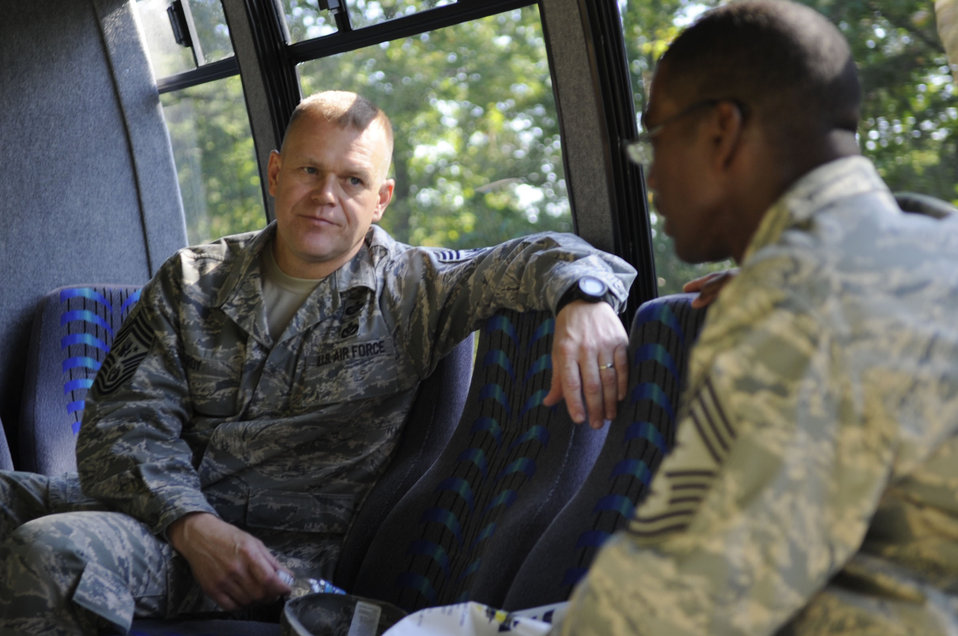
Top enlisted Airman visits Andrews Airmen

Chief Master Sgt. of the Air Force James A. Roy talks with Chief Master Sgt. James Davis Oct. 7, 2009, at Joint Base Andrews Naval Air Facility Washington. Chief Roy took time to discuss various challenges and goals as chief master sergeant of the Air Force with the leaders of Joint Base Andrews. Chief Davis is the 316th Wing and Joint Base Andrews Naval Air Facility Washington command chief.